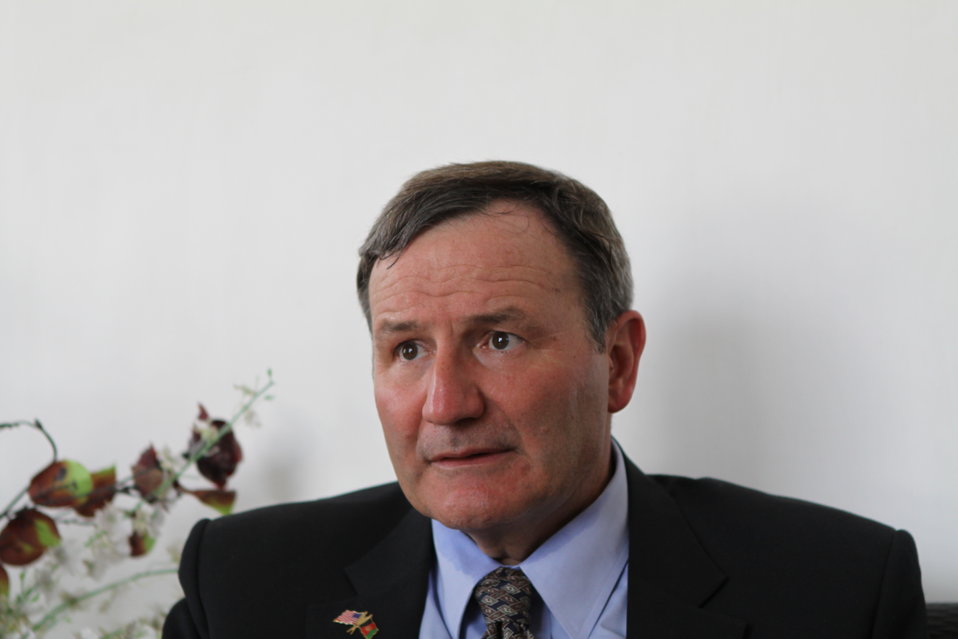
100525 Hirat Marble Conference 866